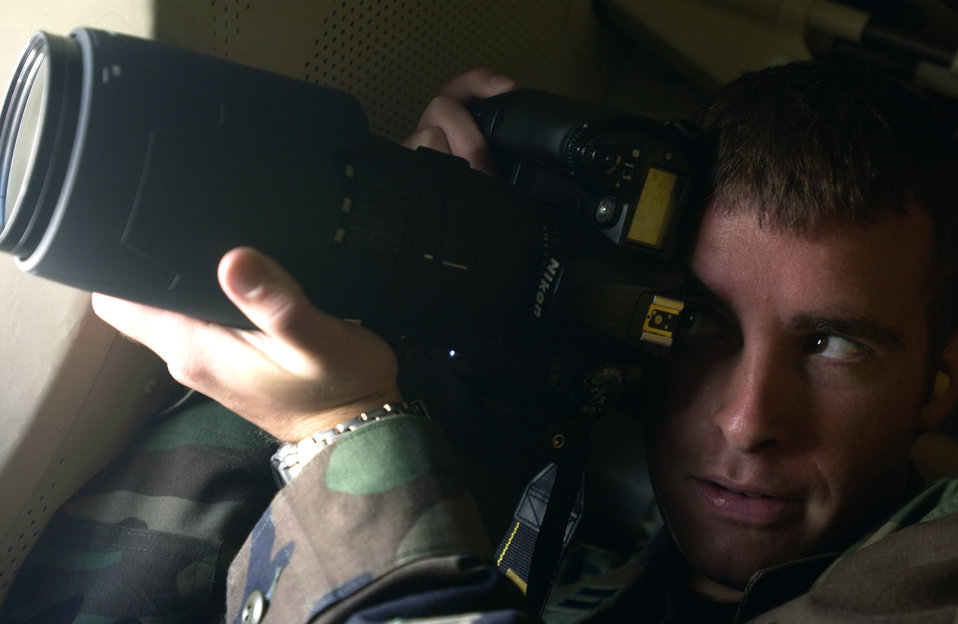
Cooperative Cope Thunder

OVER EIELSON AIR FORCE BASE, Alaska -- Capt. Alan Amato takes pictures of an Indian GR-1 aircraft being refueled by an IL-78 here July 31 during exercise Cooperative Cope Thunder. Captain Amato is assigned to the 1st Combat Camera Squadron, Charleston Air Force Base, S.C.